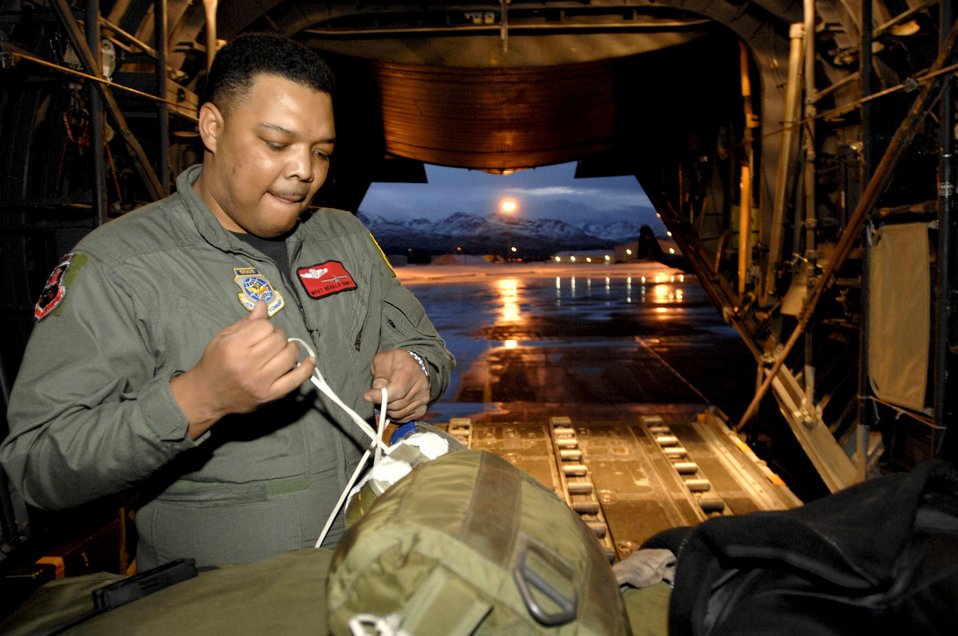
Northern exposure

Master Sgt. Gerald Gantt attaches parachutes to a pallet in preparation for Feb. 1 training mission from Elmendorf Air Force Base, Alaska. Sergeant Gantt is a loadmaster with the 517th Airlift Squadron. The 517th AS will replace its fleet of C-130s with the C-17 Globemaster III in 2007.